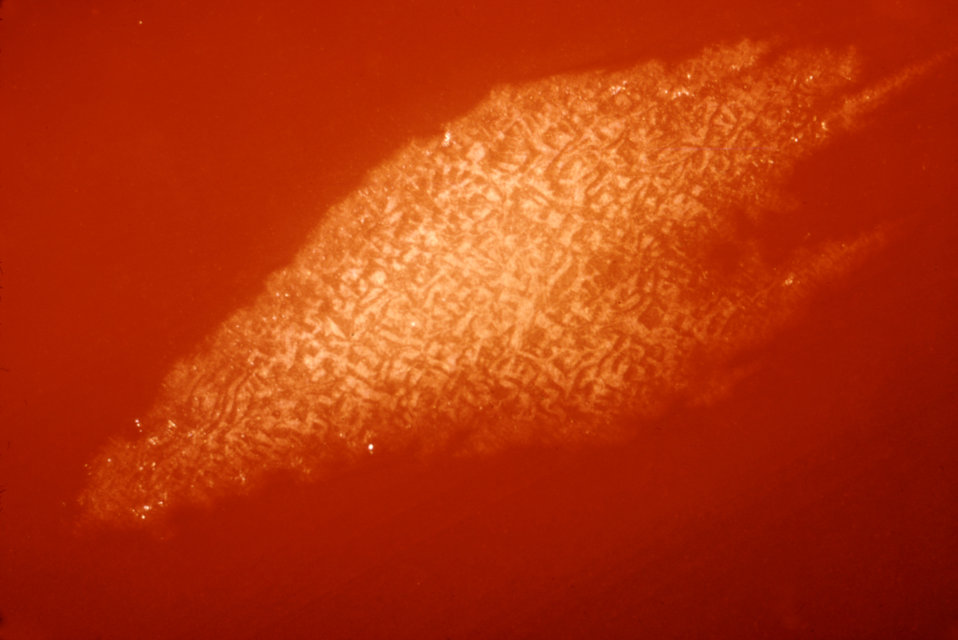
This is a Clostridium botulinum type A colony grown on a 72 hour blood agar plate; Magnification 5X.